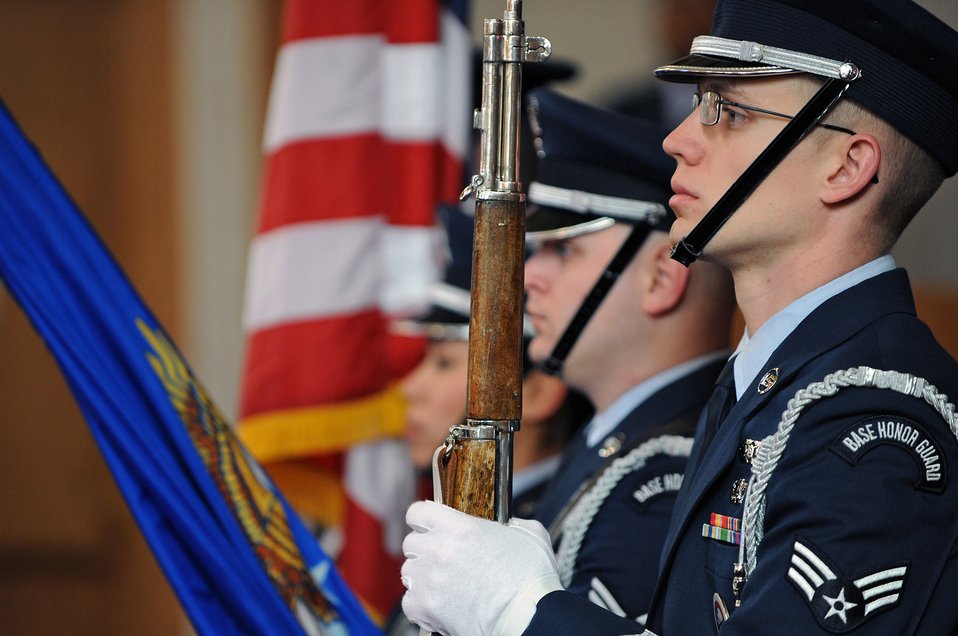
Posting the colors

The Ellsworth Air Force Base honor guard posts the colors May 8 at a memorial service held in honor of Senior Airman Jonathan Yelner. Airman Yelner died April 29 near Bagram Air Base, Afghanistan, after an improvised explosive device explosion.